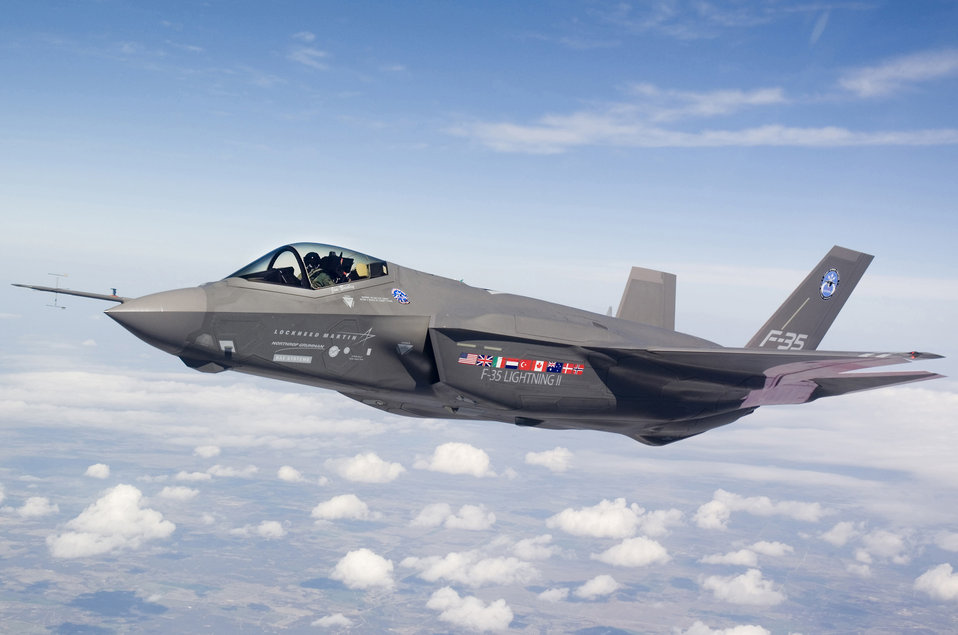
Center team works to connect new fighters, bomber

F-35 Joint Strike Fighter Lightning II test aircraft AA-1 undergoes flight testing over Fort Worth, Texas. An airborne networking team at Hanscom Air Force Base, Mass., is working to connect low-observables aircraft such as the F-22 Raptor, F-35 and B-2 Spirit with each other, and with the rest of the force.